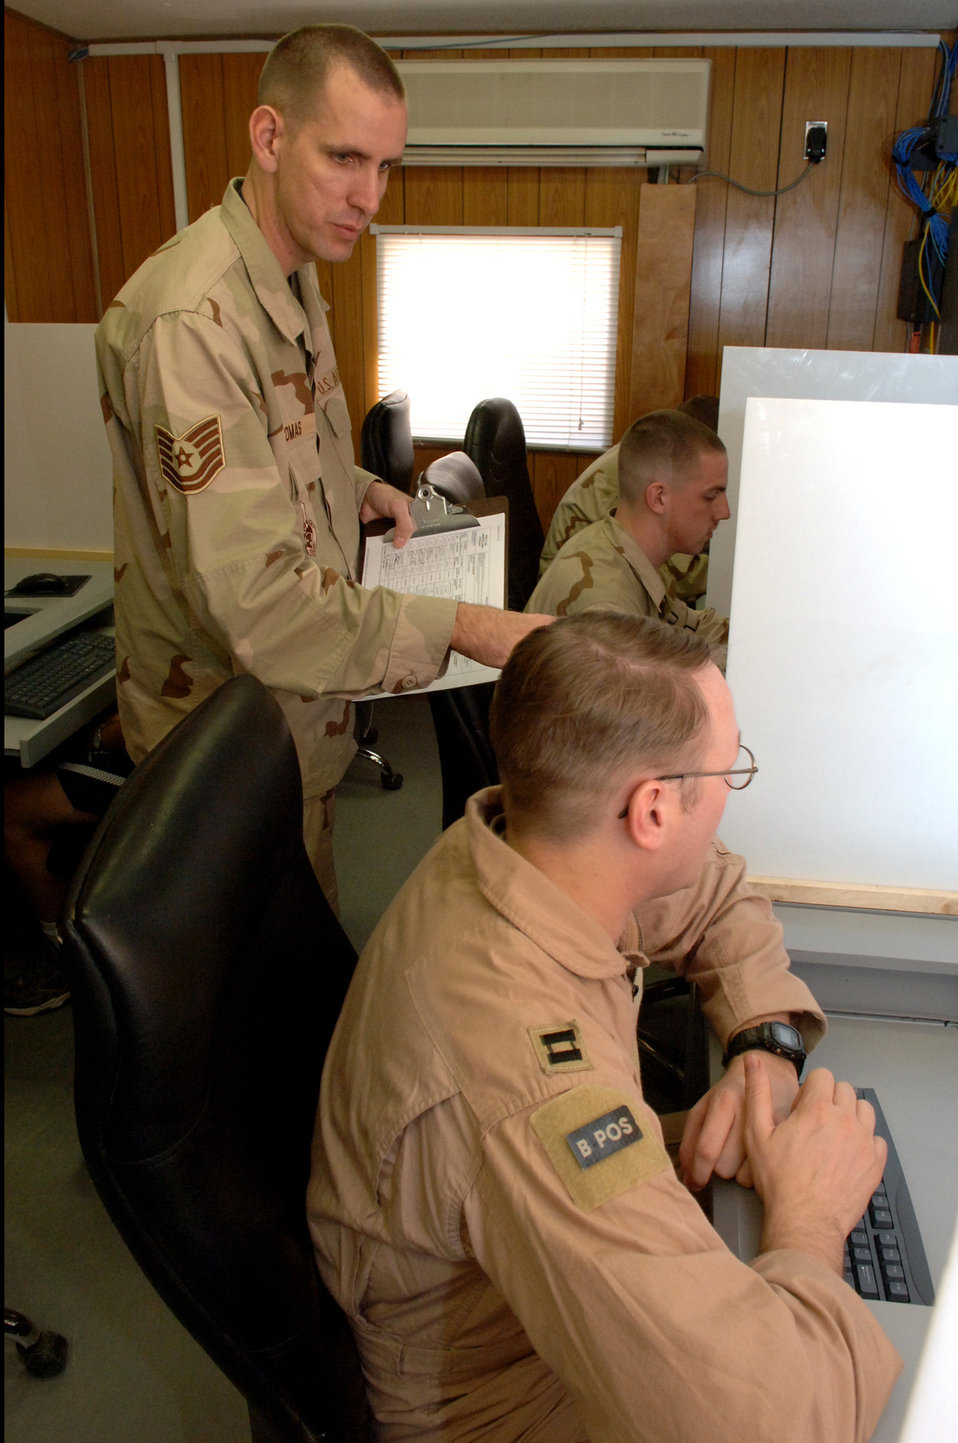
Services Airmen keep morale high in Iraq

Tech. Sgt. Jack Thomas prepares 332nd Air Expeditionary Wing Airmen for a computer-based test at Balad Air Base, Iraq. He is the 332nd Expeditionary Services Squadron's test control officer.